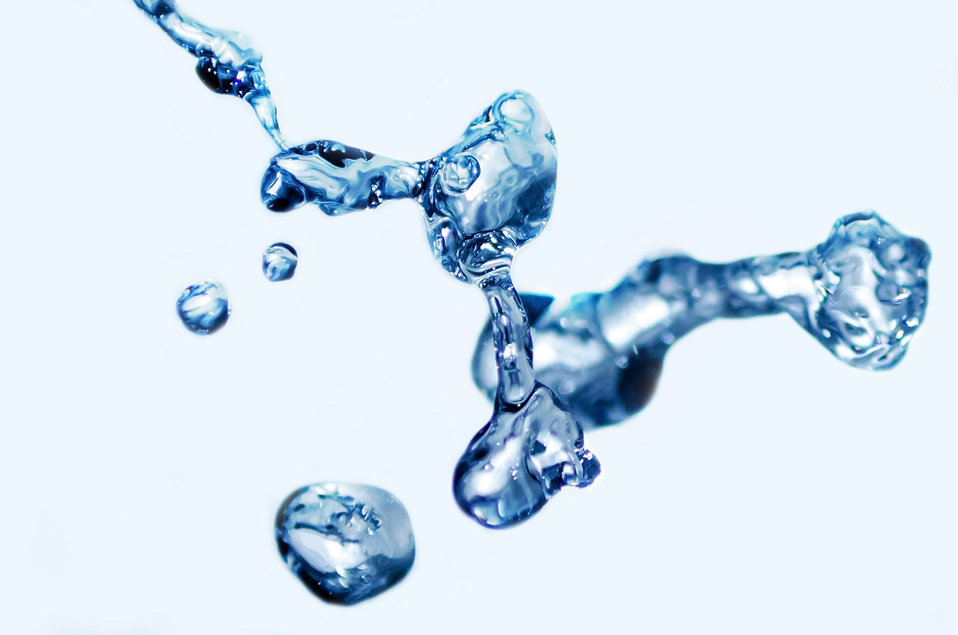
Drops of water.